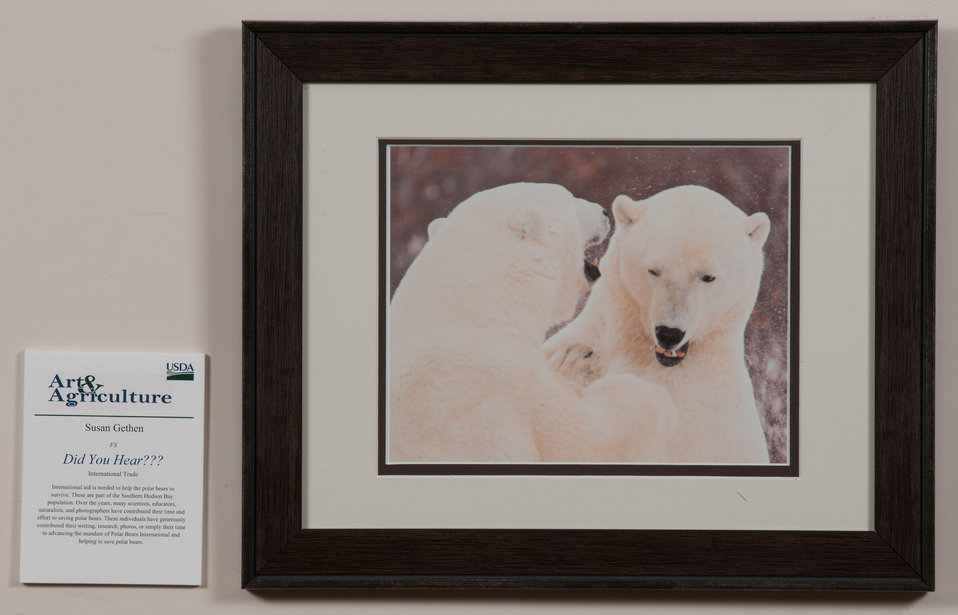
Online Viewer's Choice entries of the 2013 Art & Agriculture, Tuesday, July 9, 2013, in the South Building, Washington, D.C. Themes were expressed by employees from across the department and the contest was open to full-time and part-time USDA employees. Winning artwork will be displayed till the end of the year. U.S. Artistic expression is a creative outlet that is vital for an individual to grow and develop.